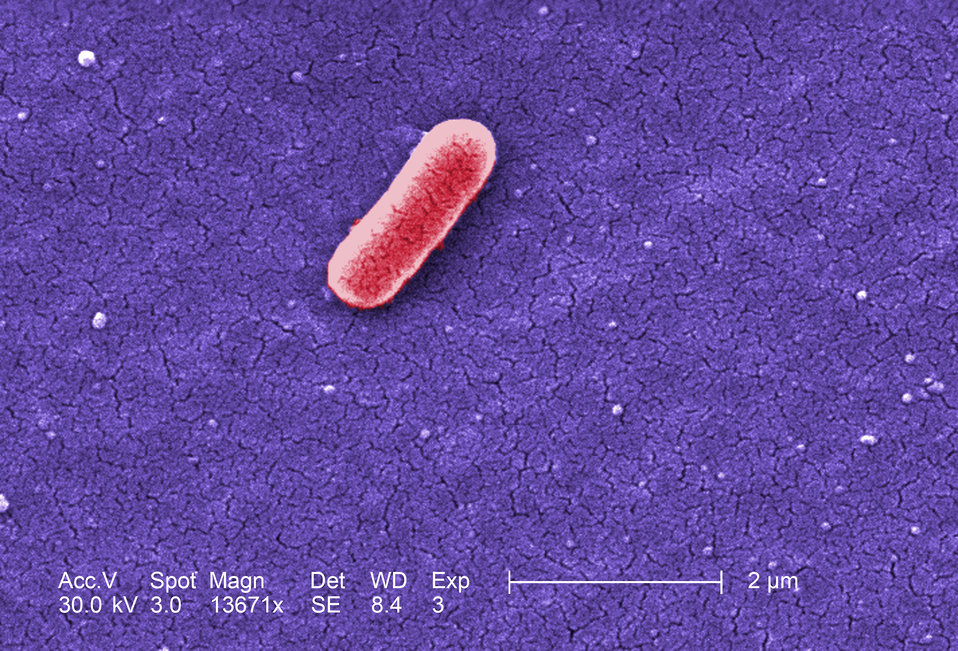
Under a high magnification of 13671x, this colorized scanning electron micrograph (SEM) depicted a single Gram-negative Escherichia coli bacterium of the strain O157:H7. E. coli O157:H7 is one of hundreds of strains of this bacterium. Although most strains are harmless, and live in the intestines of healthy humans and animals, this strain produces a powerful toxin, which can cause severe illness.E. coli O157:H7 was first recognized as a cause of illness in 1982 during an outbreak of severe bloody diarrhea; the outbreak was traced to contaminated hamburgers. Since then, most infections have come from eating undercooked ground beef.The combination of letters and numbers in the name of the bacterium refers to the specific markers found on its surface, which distinguishes it from other types of E. coli. See PHIL 8801 for a black and white version of this image.